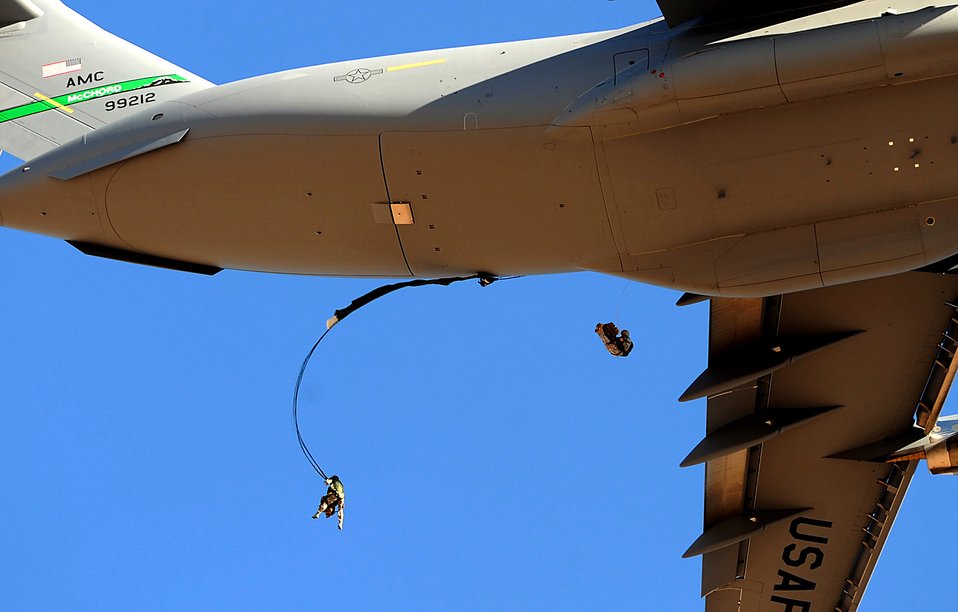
Dropping like it's hot

Airmen parachute into a drop zone from a C-17 Globemaster III Oct. 15, 2011, at Nellis Air Force Base, Nev. The Airmen perform airdrop missions to stay current on training and certifications, enabling them to perform jump missions and operate their own drop zones. The Airmen are assigned to the 820th RED HORSE Squadron Airborne Flight at Nellis AFB.